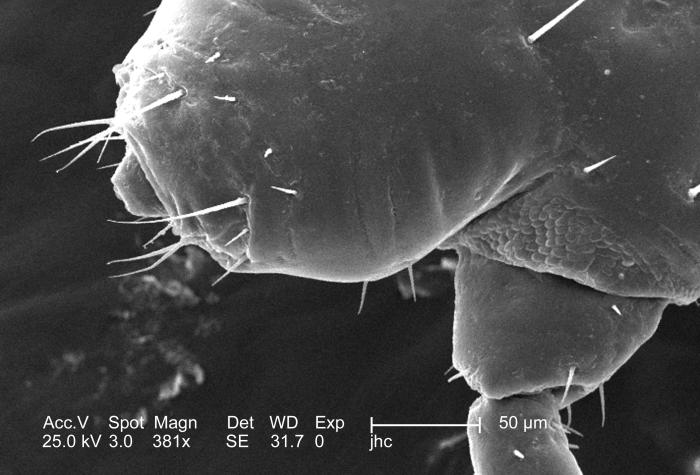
At a moderate magnification of 381x, this 2006 scanning electron micrograph (SEM) depicted an enlarged dorsal view of the mouth region of a male louse, Pediculus humanus var. corporis. In this particular view, the louse's 'haustellum' is withdrawn, or internalized inside the mouth region of the insect's cephalic region. The haustellum is a tube-like structure, fromed from what is believed to be a modification of the labium, but is armed with teeth, which act to grab, and hold on to the skin surface of its host while obtaining its blood meal. The insect pierces the host's skin with its sharply-pointed set of three stylets, which together for what is termed the fascicle. Note PHIL# 9214, 9216, in which case a lose is in its feeding mode on the skin surface of its host.